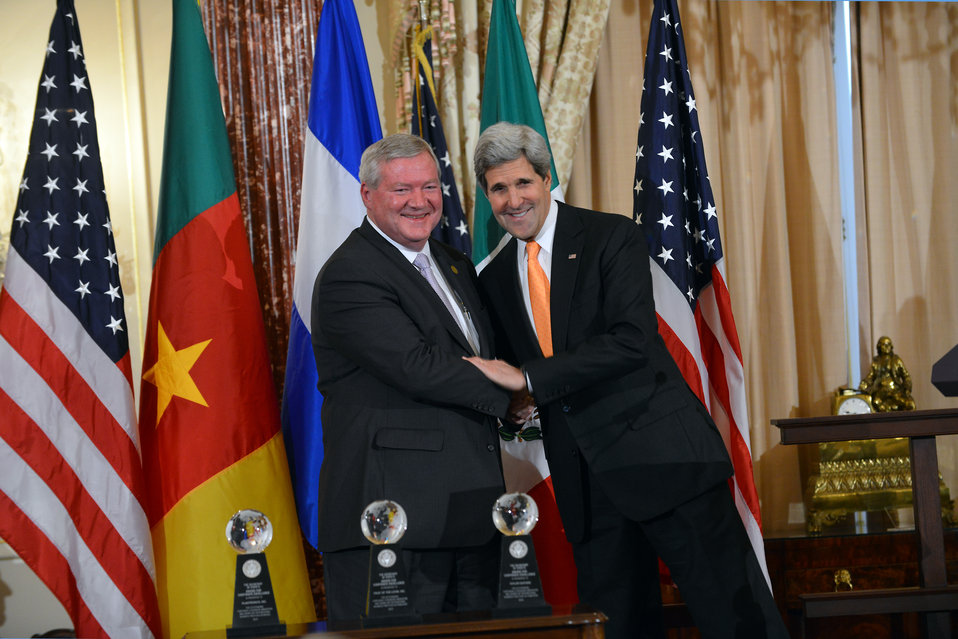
Secretary Kerry Shakes Hands With CEO Medlin of Fruit of the Loom, Inc.

U.S. Secretary of State John Kerry shakes hands with Rick Medlin, CEO of Fruit of the Loom, Inc. in Honduras, which received the Secretary of State's Award for Corporate Excellence in the large business category, at the U.S. Department of State in Washington, D.C., on January 29, 2014.